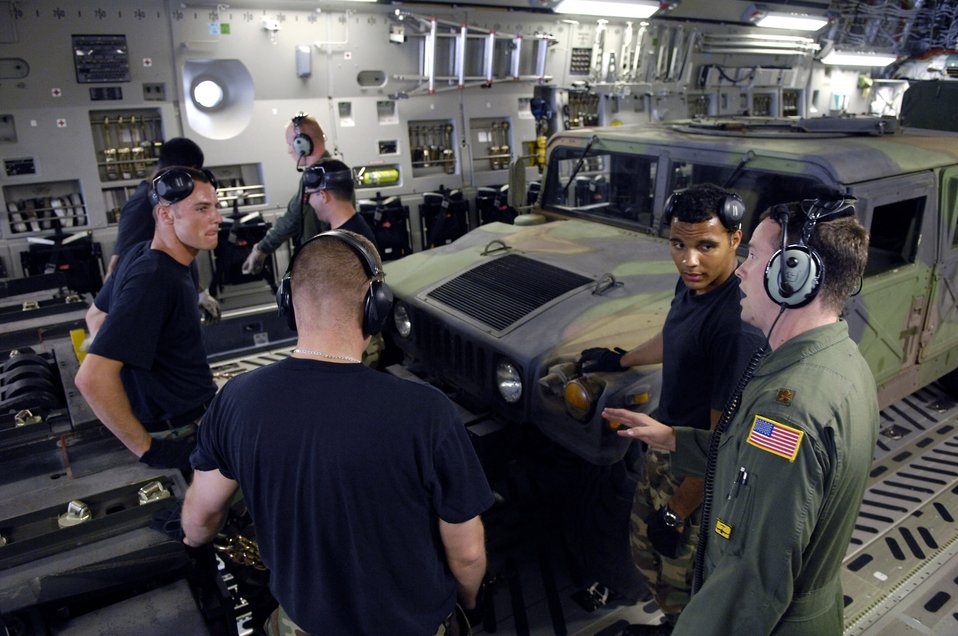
Hickam Rodeo team ready to go

Hickam Air Force Base, Hawaii, Rodeo team members discuss techniques to on load equipment onto a C-17 Globemaster III July 13. Members from the 535th Airlift Squadron and 15th Logistics Readiness Squadron Combat Mobility Element are practicing for upcoming Air Mobility Command Rodeo at McChord AFB, Wash.